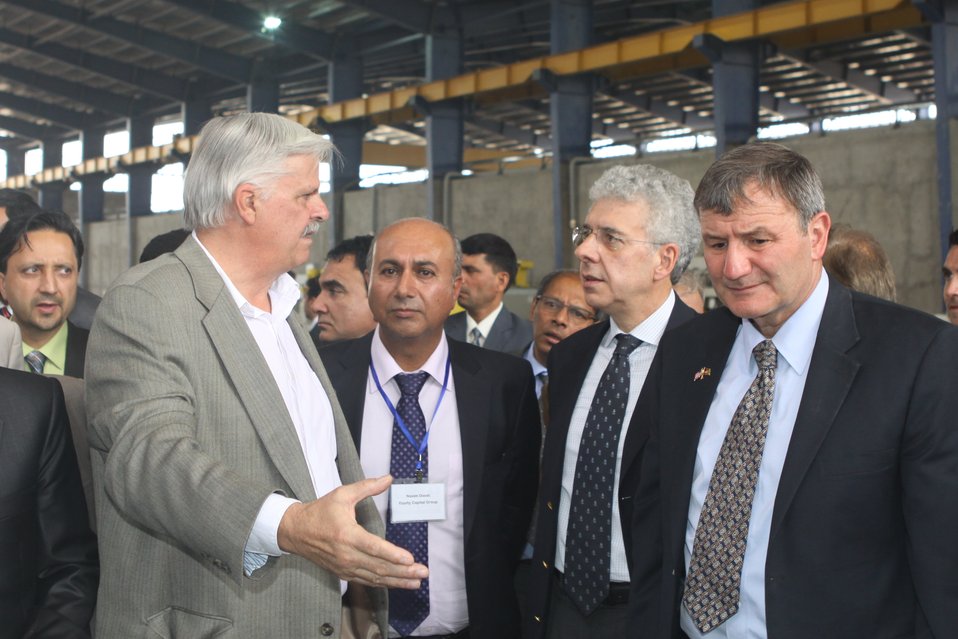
100525 Hirat Marble Conference 485